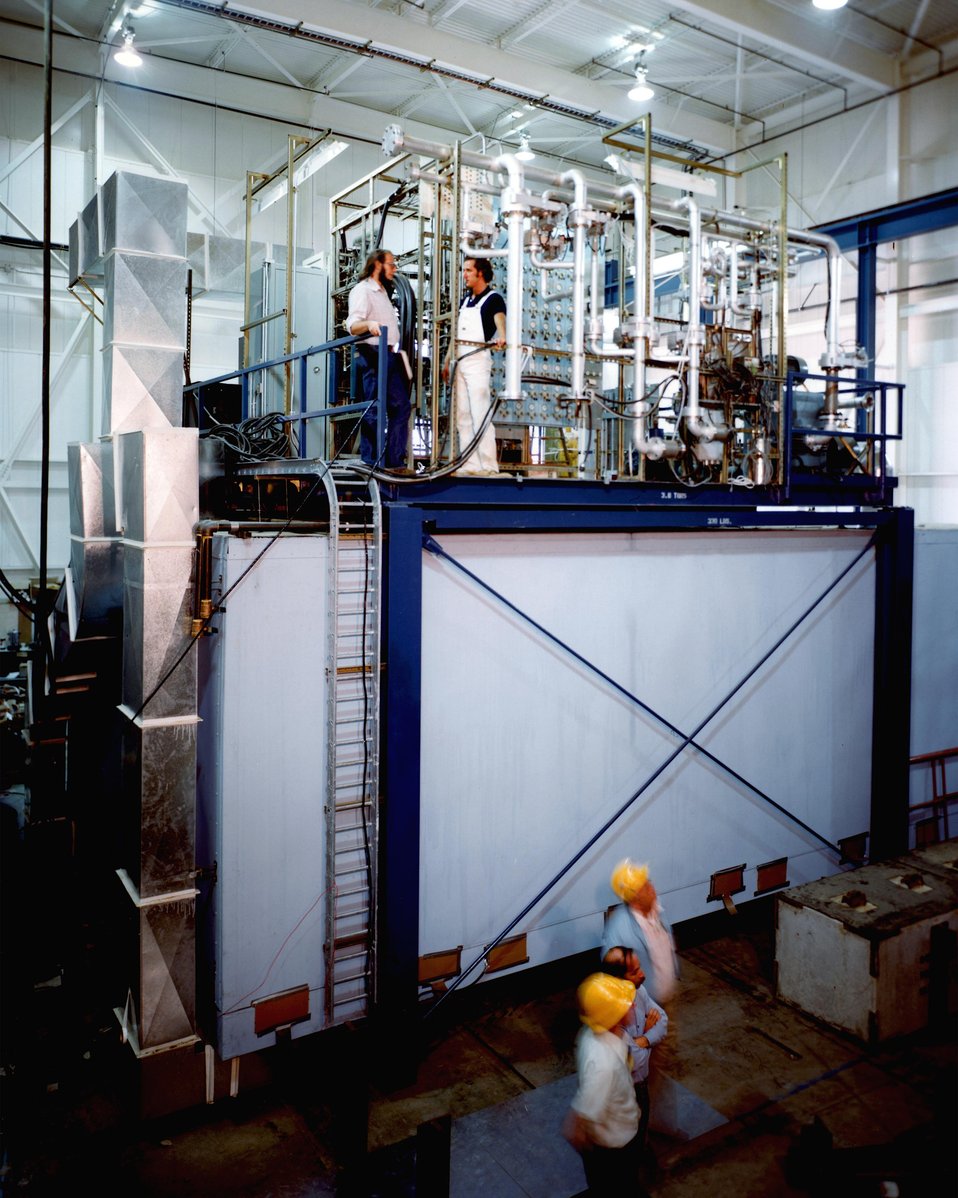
THE MARK II CRYOGENICS CONTROLS ON TOP OF THE LOCAL ELECTRONICS AND COUNTING HOUSE.

THE POSITRON-ELECTRON PROJECT (PEP) IS A JOINT UNDERTAKING OF STANFORD LINEAR ACCELERATOR CENTER (SLAC) AND THE LAWRENCE BERKELEY LABORATORY (LBL). THE PEP MACHINE IS DESIGNED TO STORE BEAMS OF ELECTRONS AND POSITRONS CIRCULA- TING IN OPPOSITE DIRECTIONS AT SINGLE-BEAM ENERGIES BETWEEN 4 GEV AND 18 GEV. THE SOURCE OF THE BEAMS WILL BE THE PRESENT SLAC ACCELERATOR. THE COUNTER-ROTATING BEAMS OF ELECTRONS AND POSITRONS WILL COLLIDE WITH EACH OTHER AT SIX POINTS IN THE MACHINE. THESE COLLISION OR BEAM-INTERACTION POINTS WILL BE USED FOR HIGH-ENERGY PHYSICS EXPERIMENTS.